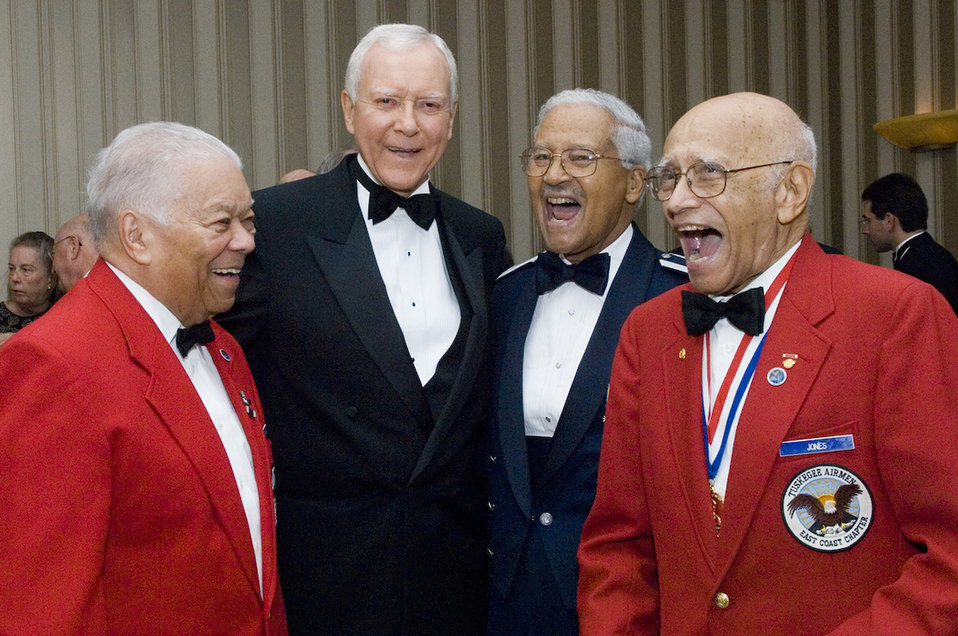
Air Force Association honors Doolittle Raiders, Tuskegee Airmen

Sen. Orrin Hatch laughs with retired Lt. Col. Walter McCreary, retired Col. Charles McGee and retired Col. Elmer Jones at the Air Force anniversary dinner Sept. 16, 2009, at the Gaylord National Hotel and Convention Center in National Harbor, Md. Senator Hatch is the senator of Utah, and Colonels Jones, McGee and McCreary are members of the Tuskegee Airmen. Senator Hatch received the W. Stuart Symington Award and Tuskegee Airmen were presented a Lifetime Achievement Award. The dinner was the end of the 2009 Air Force Association Air & Space Conference and Technology Exposition.